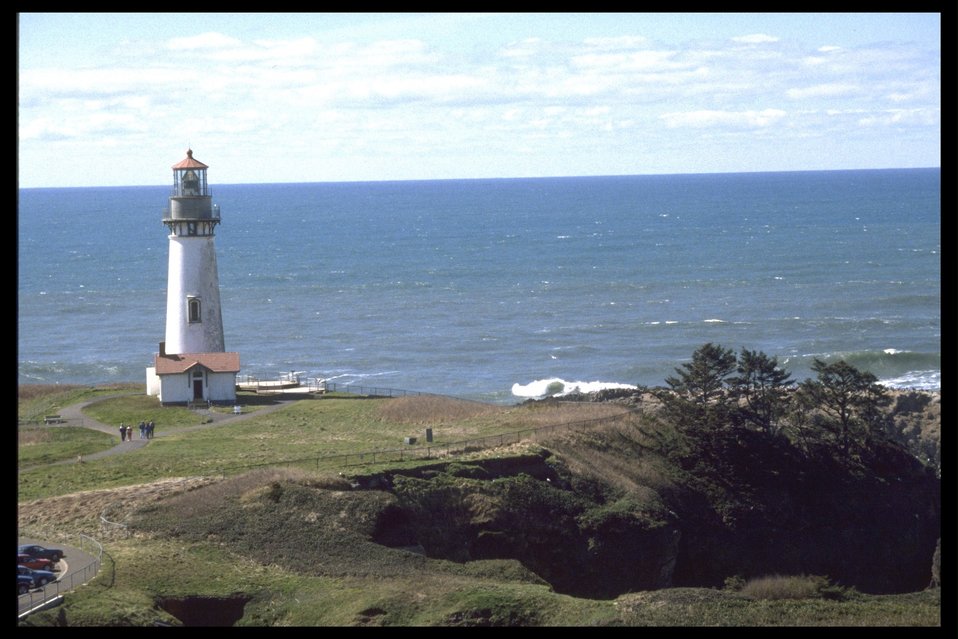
Yaquina Head Lighthouse.